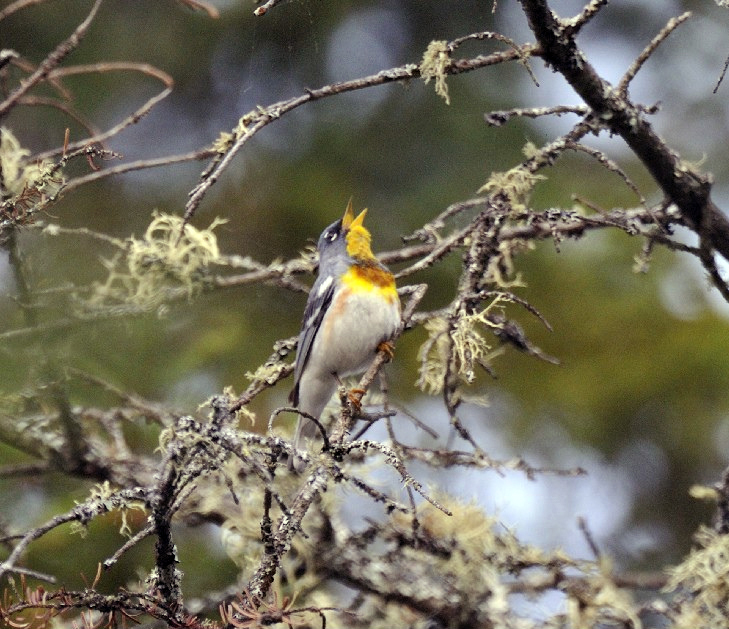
Photo of the Week - Male Northern Parula (ME)

Photo of the Week - 06/27/11.

Male Northern Parula photographed at Kennebago Lake in Maine on May 30, 2011.